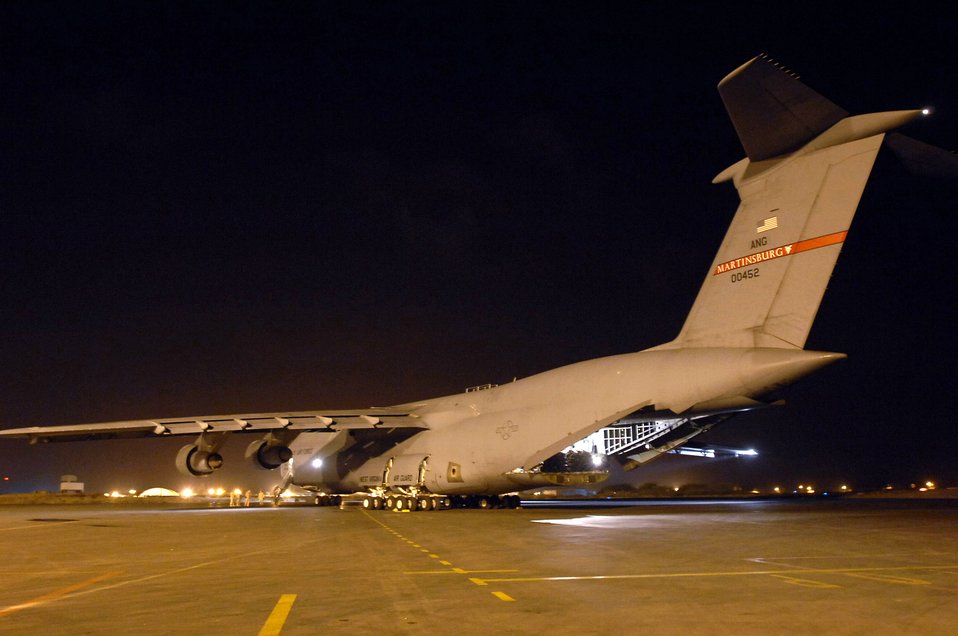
Air National Guard crew lands its 1st C-5 in Djibouti

Crews remove one of two Marine CH-53E Super Stallion helicopters from a C-5 Galaxy April 10 in Djibouti, Africa. The Galaxy's overseas journey was a first for the West Virginia Air National Guard's 167th Airlift Wing, a unit that recently gained the massive airframe capable of transporting oversized cargo to any theater of combat on the globe.